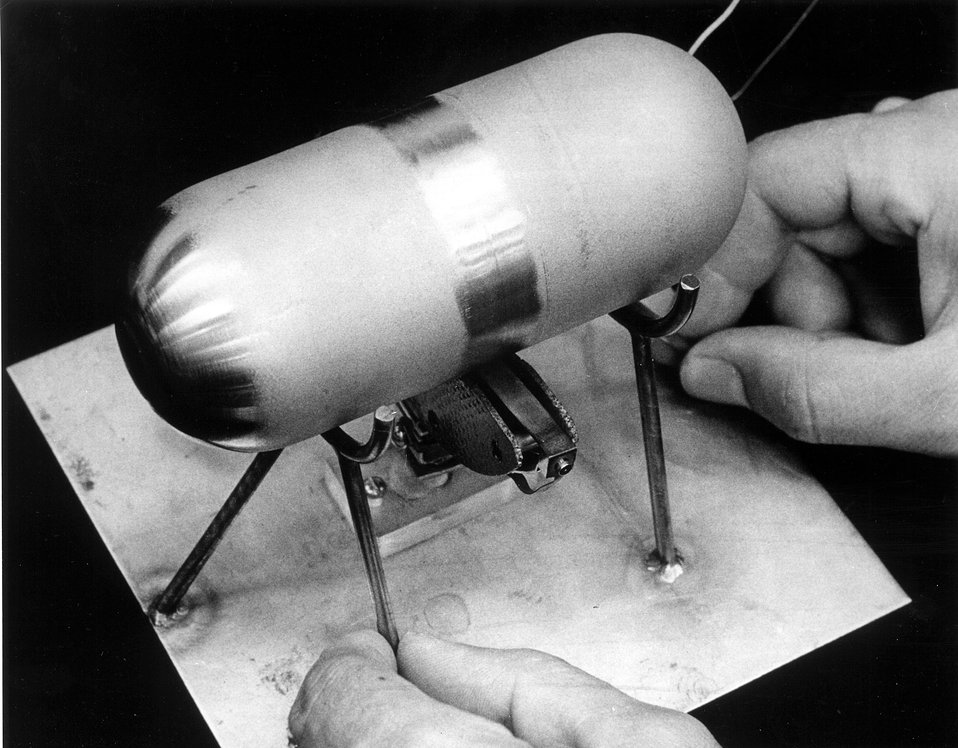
Miamisburg, Ohio... SNAP-19B Intact Re-entry Heat Sources (IRHS)are being fabricated at Mound Laboratory to power the nuclear generators for the Nimbus-B advanced weather satellite.